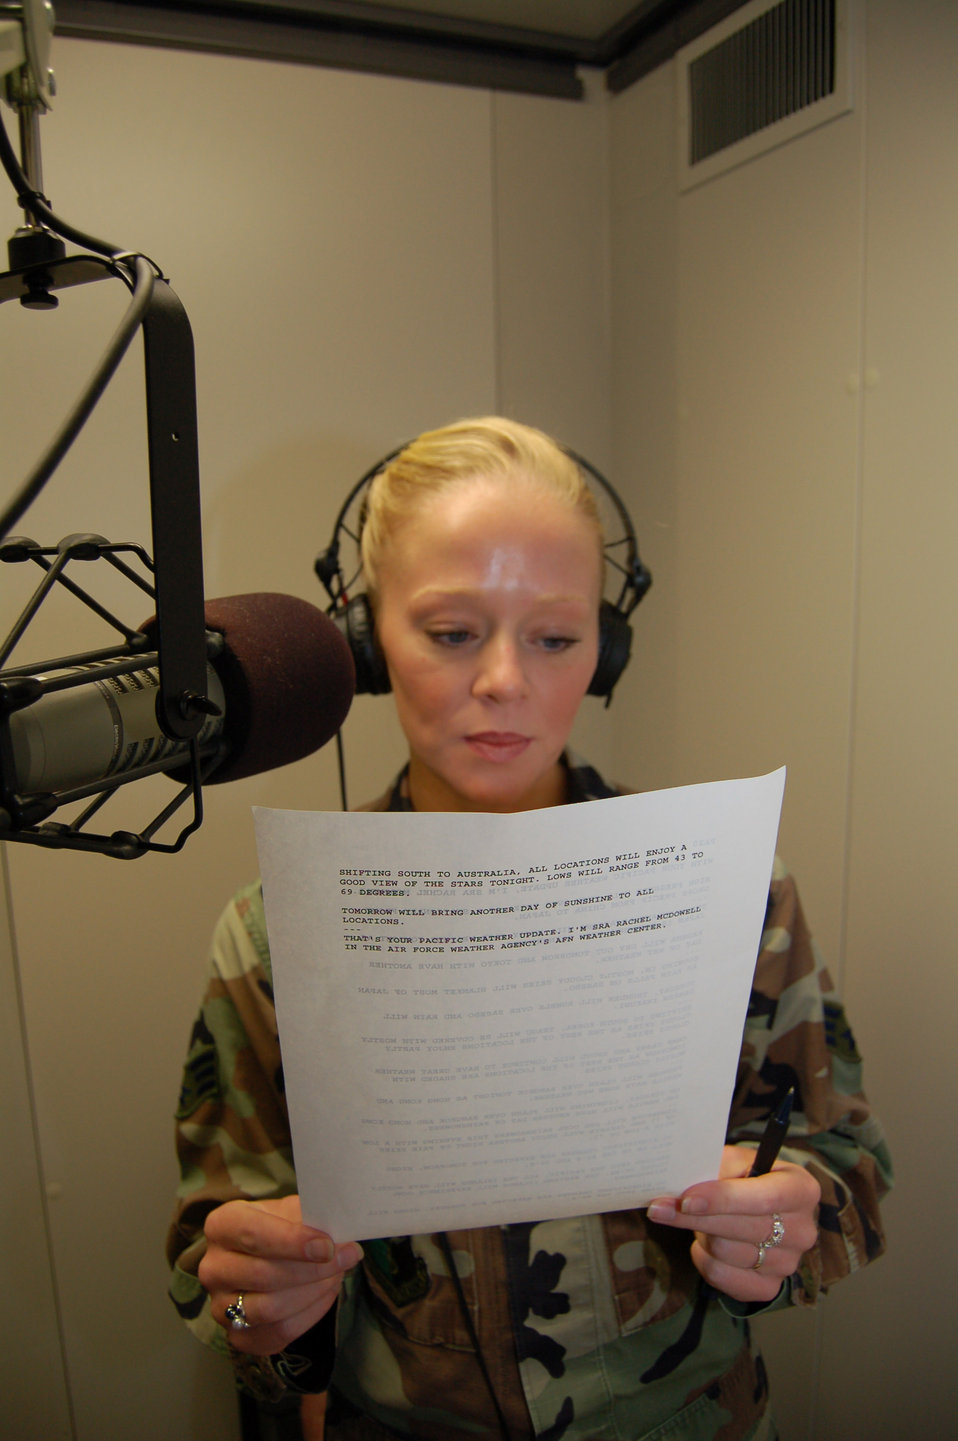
Weather agency helps commanders with mission decisions

Senior Airman Rachael McDowell reads weather forecasts as part of a two-minute weather spot for Air Force News Service overseas. Airman McDowell is a weather broadcast technician with the Air Force Weather Agency at Offutt Air Force Base, Neb.